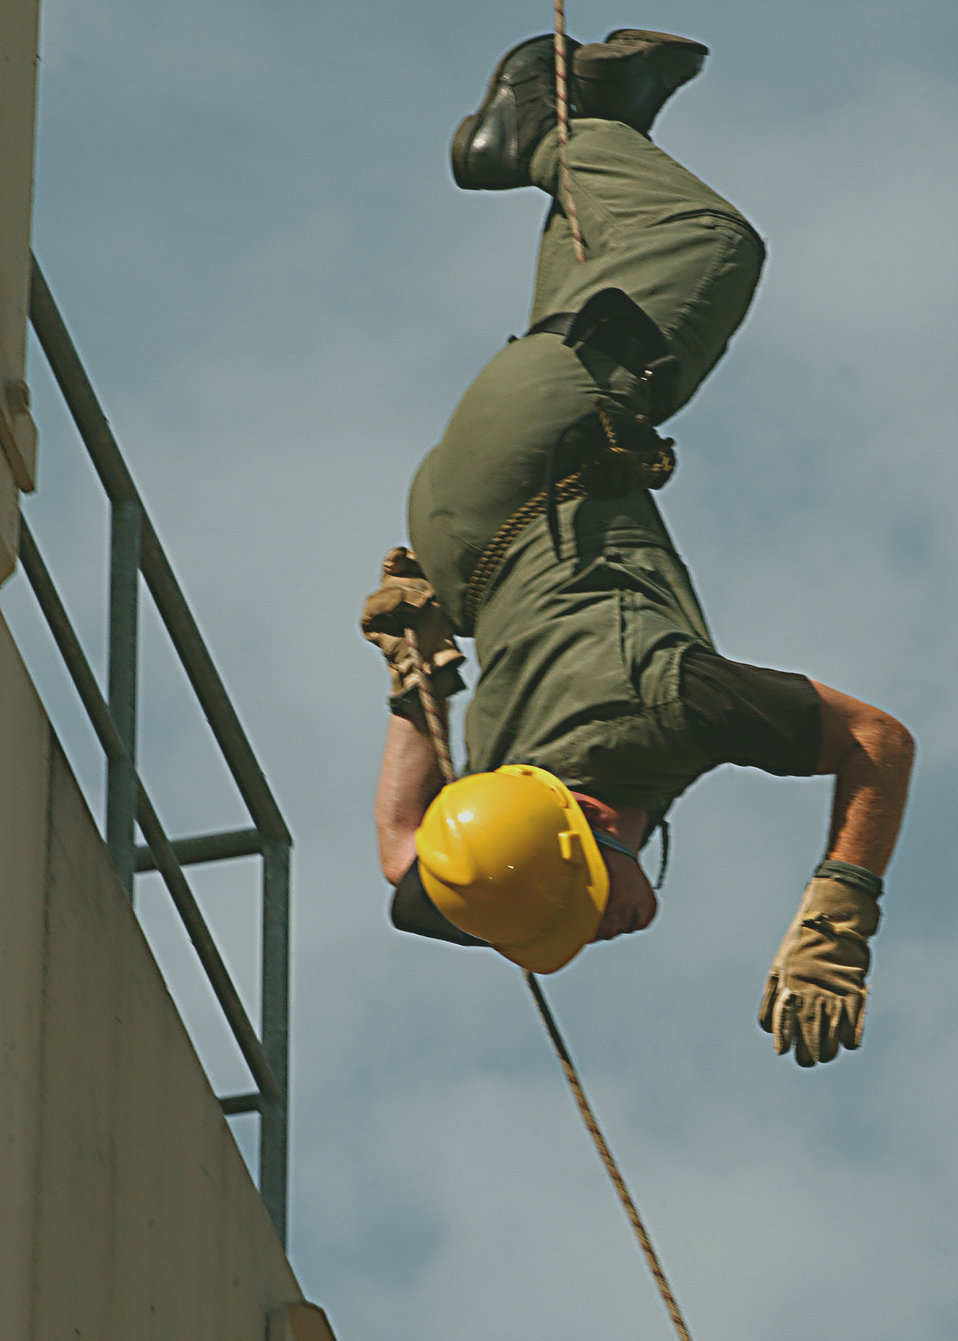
OO6 and 3/8ths

RAMSTEIN AIR BASE, Germany -- Senior Airman Jason Snow, an explosive ordnance disposal technician with the 86th Civil Engineering Squadron here, begins to repel upside down from a fifty-foot building during exercise Silver Flag. The purpose of exercise Silver Flag is to equip a deployable communications team with the essential knowledge and skills to establish communications at a bare base site.